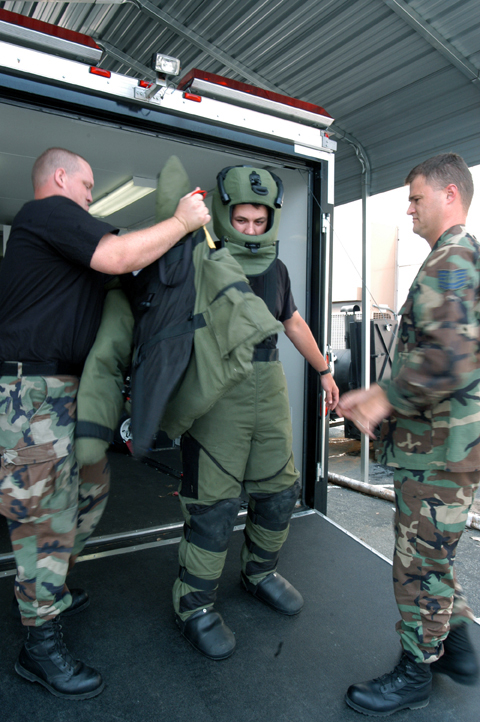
EOD team enjoys 'a booming business'

ROBINS AIR FORCE BASE, Ga. -- Staff Sgt. William Campbell (left) and Tech. Sgt. John Bell (right) help Staff Sgt. Adam Fletcher into a bomb suit which weighs about 100 pounds. The Airmen are assigned to the 116th Air Control Wing's explosive ordnance and disposal flight here.